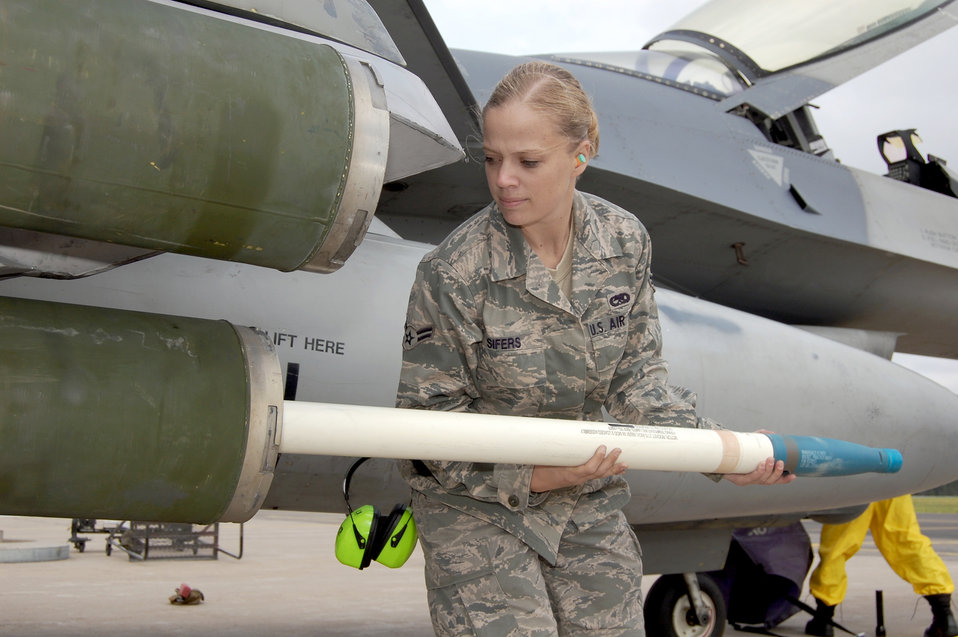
Getting lethal

Airman 1st Class Kelly Sifers loads a practice rocket onto an F-16 Fighting Falcon during a training exercise Aug. 4, 2010, at Kallax Air Base, Sweden. Units from Aviano Air Base, Italy, conducted more than 180 air-to-air and air-to-ground missions with the Swedish air force's Norrbotten Wing. Airman Sifers is a weapons load crewmember with the 31st Aircraft Maintenance Squadron.